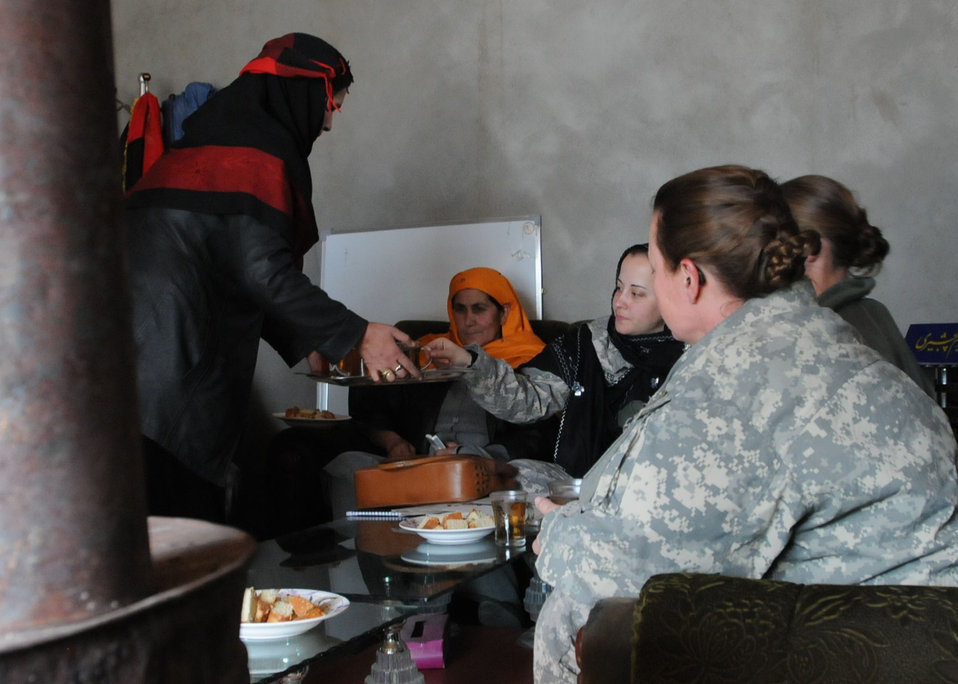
Visiting Afghan women

An Afghan woman serves tea to several U.S. servicemembers during their visit to a village in the Panjshir Valley. They were from a Provincial Reconstruction Team at Bagram Airfield, Afghanistan, who traveled to Forward Operating Base Lion in the Panjshir Valley to meet with Afghan women there. Female servicemembers deployed to FOB Lion work hand in hand with the local Afghan women, teaching them things like first aid and how to increase their crop output.